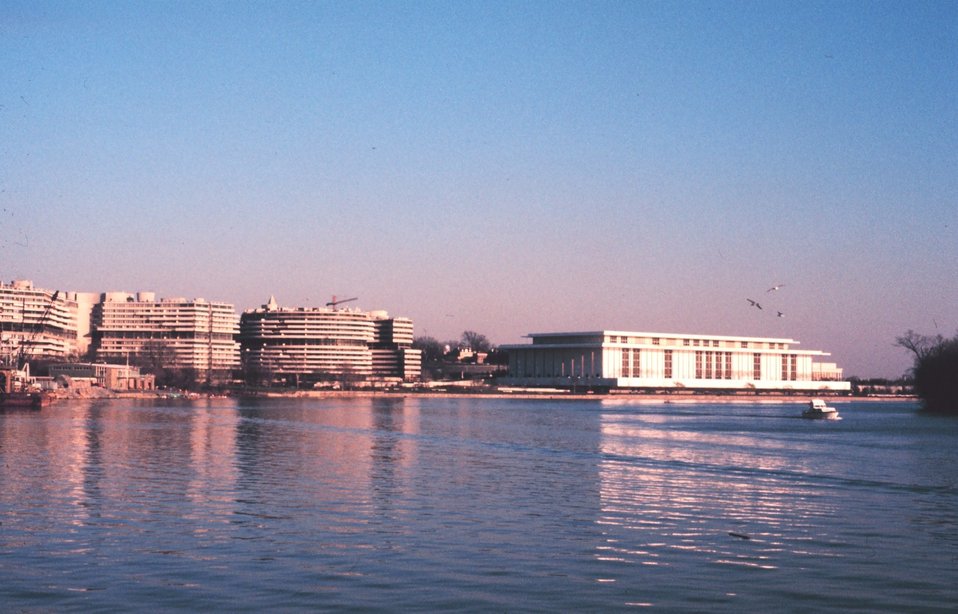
The Kennedy Center (to right) and the Watergate Complex